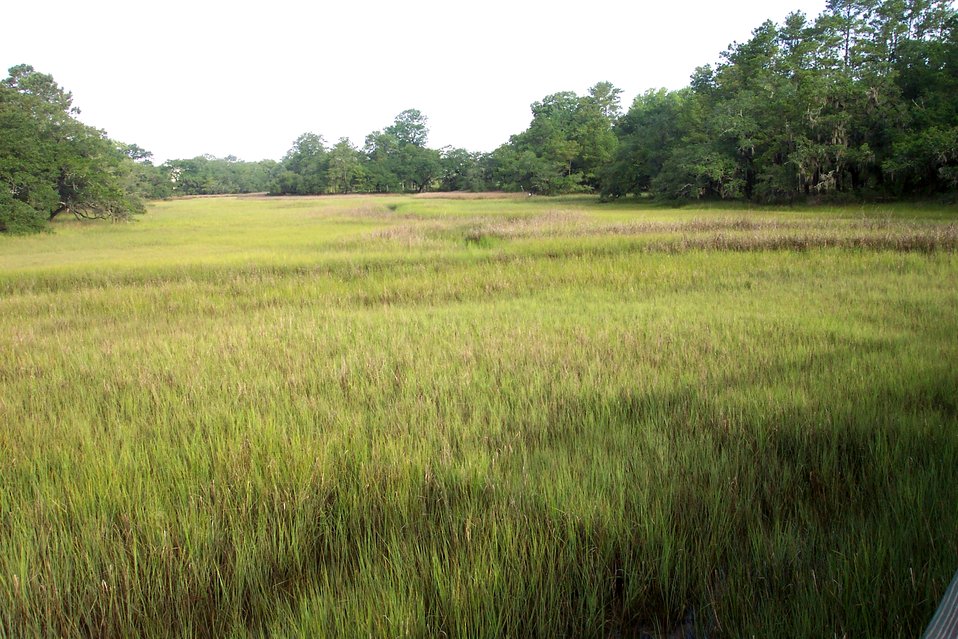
A salt water marsh giving the appearance of a luxuriant meadow near the Wando River.